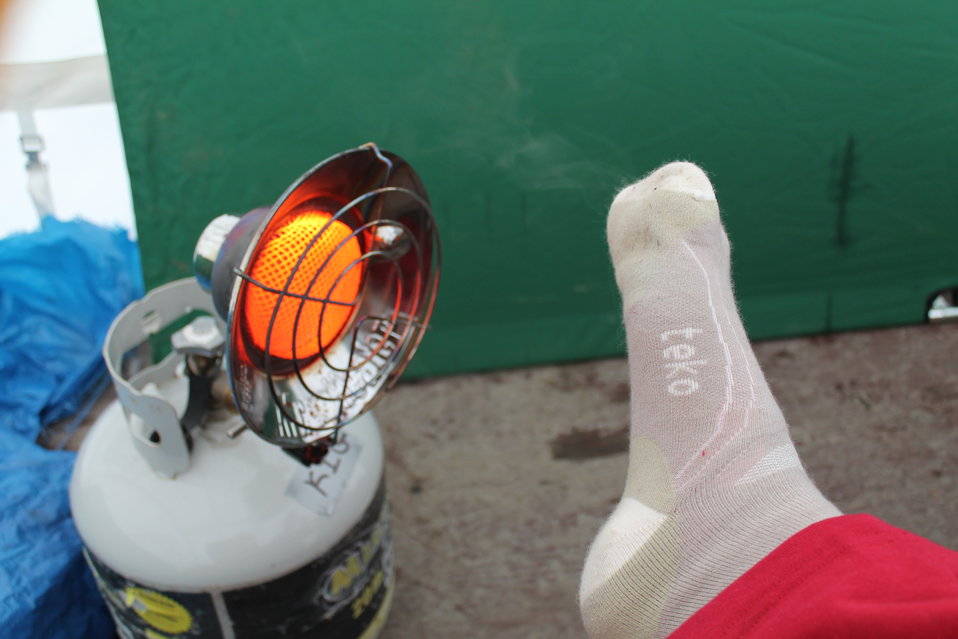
Staying Warm

When camps are deployed before break-up it is important that staff can stay warm and dry.

USFWS Yukon Delta NWR